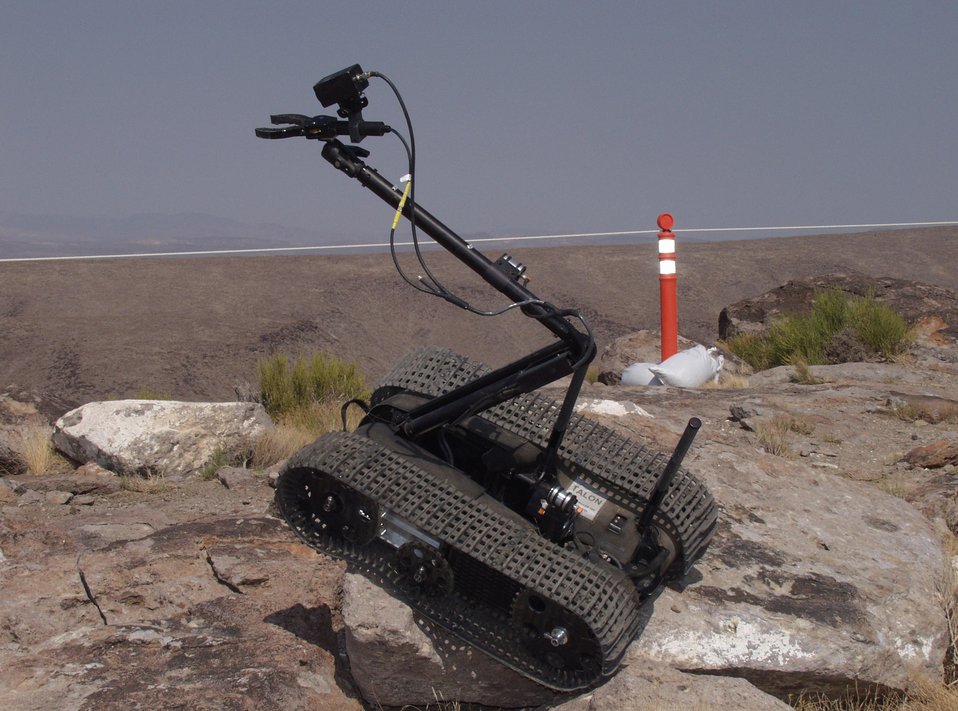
ROBOT EQUIPPED WITH FOUR VIDEO CAMERAS AND TANK-LIKE WHEELS CLIMBS A ROCK PILE ON THE YUCCA MOUNTAIN CREST.

DOE'S OFFICE OF CIVILIAN RADIOACTIVE WASTE MANAGEMENT IS EXPERIMENTING WITH ROBOTIC TECHNOLOGIES FOR YUCCA MOUNTAIN. THE SITE IS BEING EVALUATED FOR SUITABILITY AS THE NATION'S FIRST REPOSITORY FOR HIGH LEVEL NUCLEAR WASTE. STUDIES INCLUDE SURFACE TESTING OF ROCK, SOIL SAMPLES AND WATER MOVEMENT, SUBSURFACE ROCK TESTING AT DEEP LEVELS AND LABORATORY ANALYSIS OF SAMPLES.